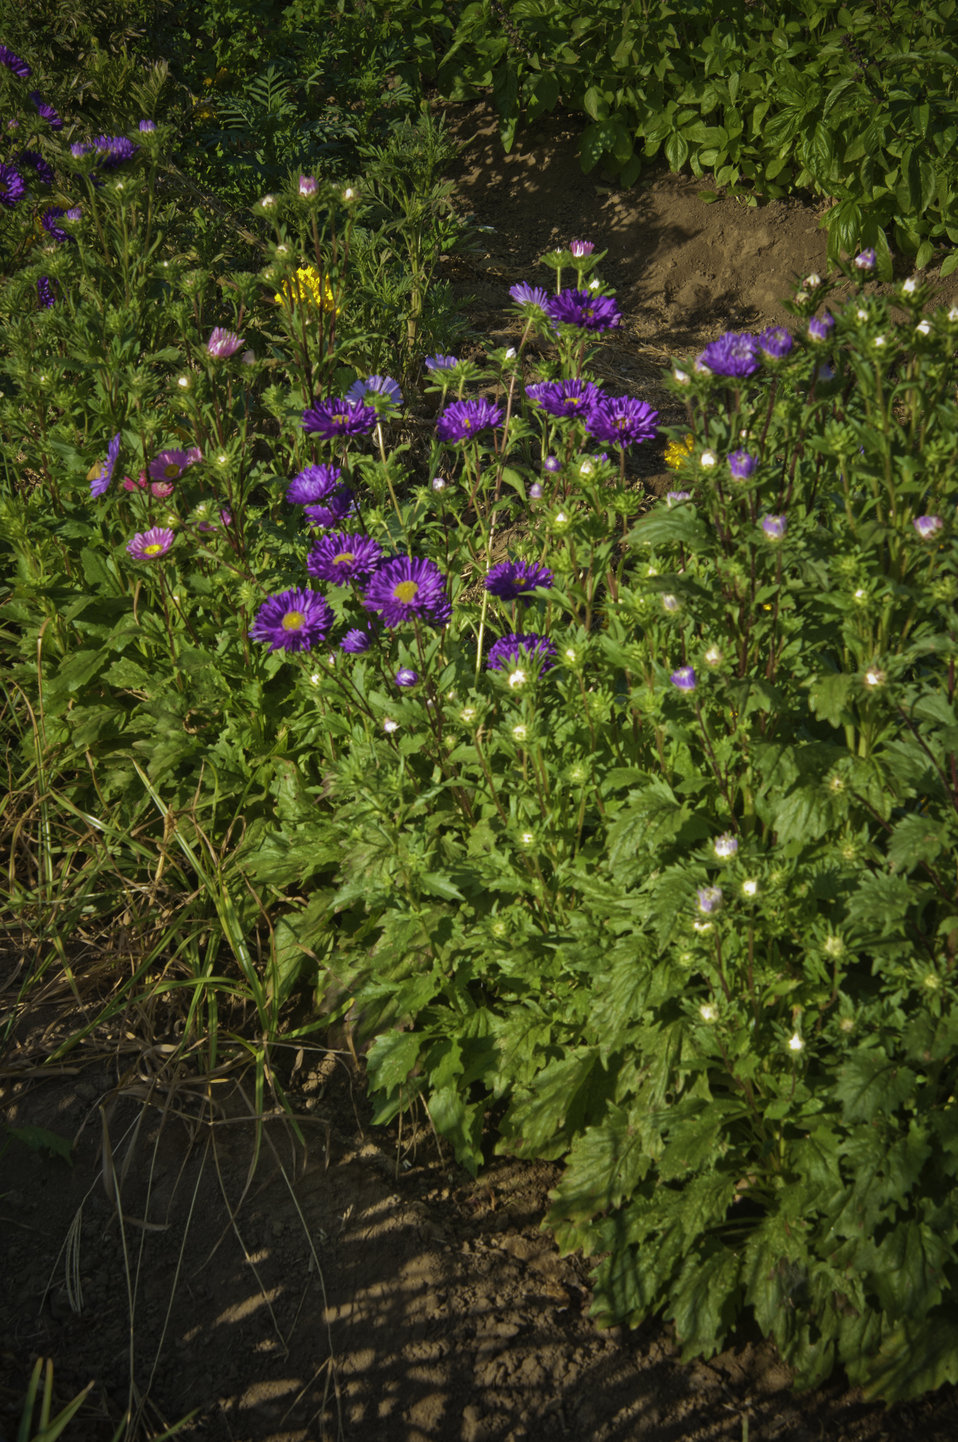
May Young Vu a Moung farmer harvesting flowers on her farm May's Flower's in Sanger, California on Thursday, August 29, 2013.